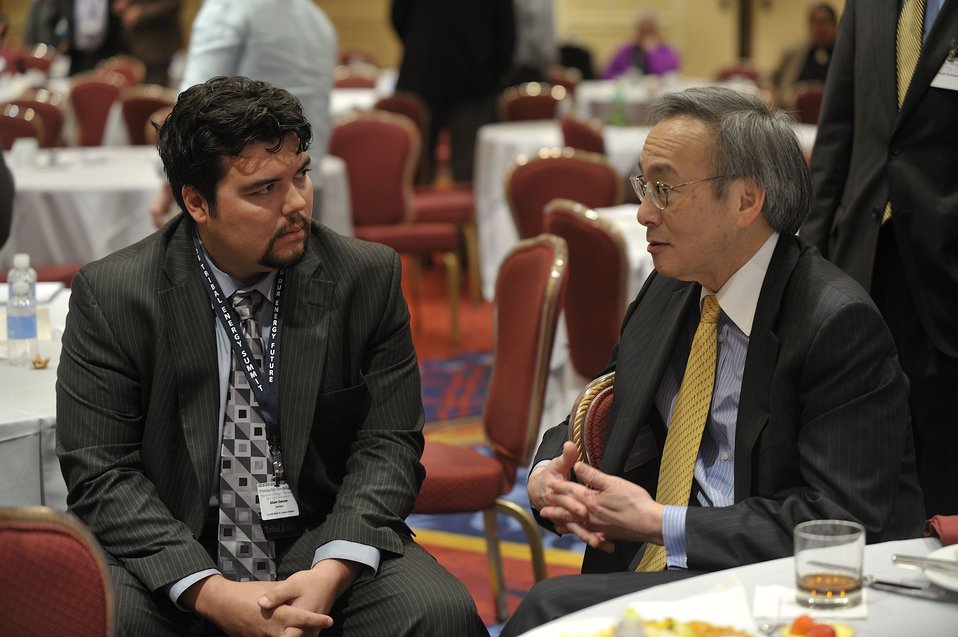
Tribal Energy Summit

Secretary Chu chats with Adam Geisler, La Jolla Band of Luiseno Indians, La Jolla Tribal Council Secretary